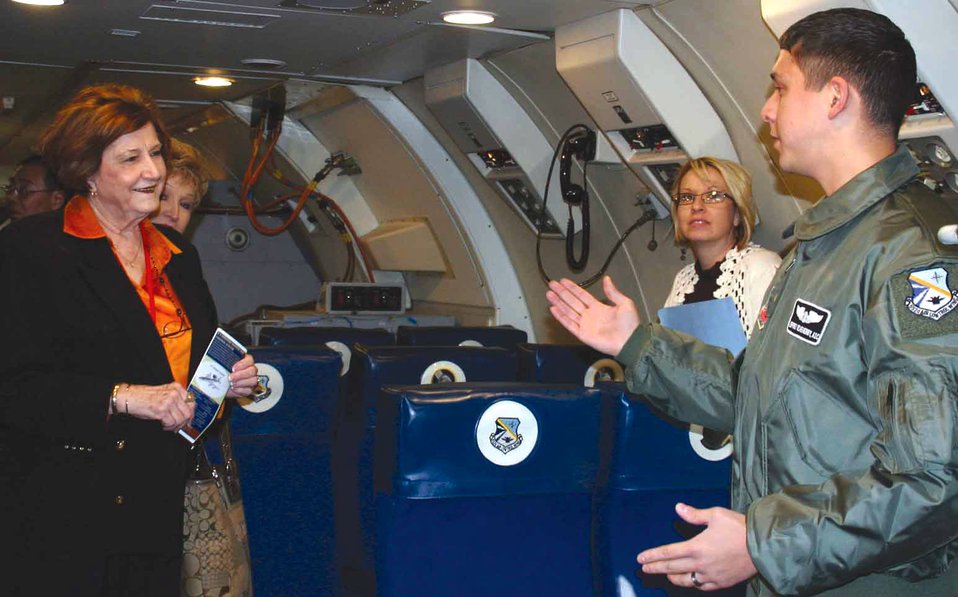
Legislators visit Tinker AFB, learn about Air Force's mission

State legislators from Arkansas, Kentucky and Oklahoma visited Tinker Air Force Base, Okla., Nov. 14 as a part of the National Council of State Government Officials conference. In addition to a visit to Bldg. 3001, the group went to the 552nd Air Control Wing where they toured an E-3 Sentry.